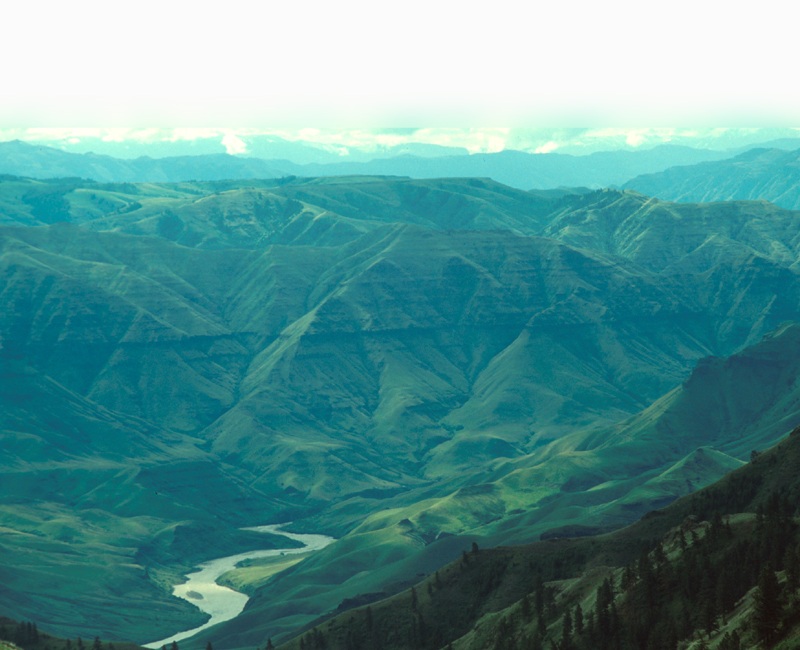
Cottonwood Field Office UCSC Upper Columbia Salmon Clearwater District